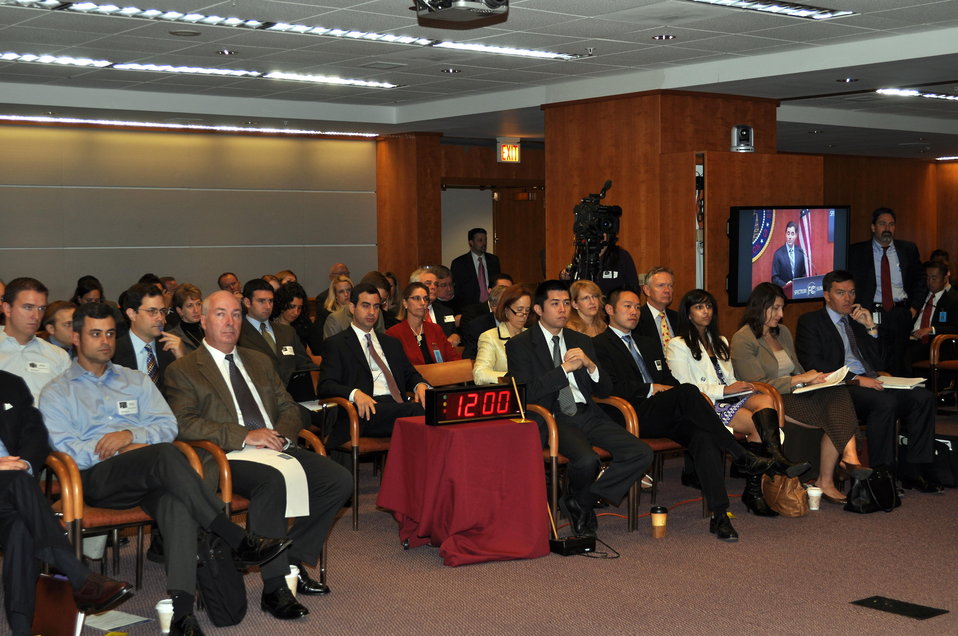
Spectrum Summit